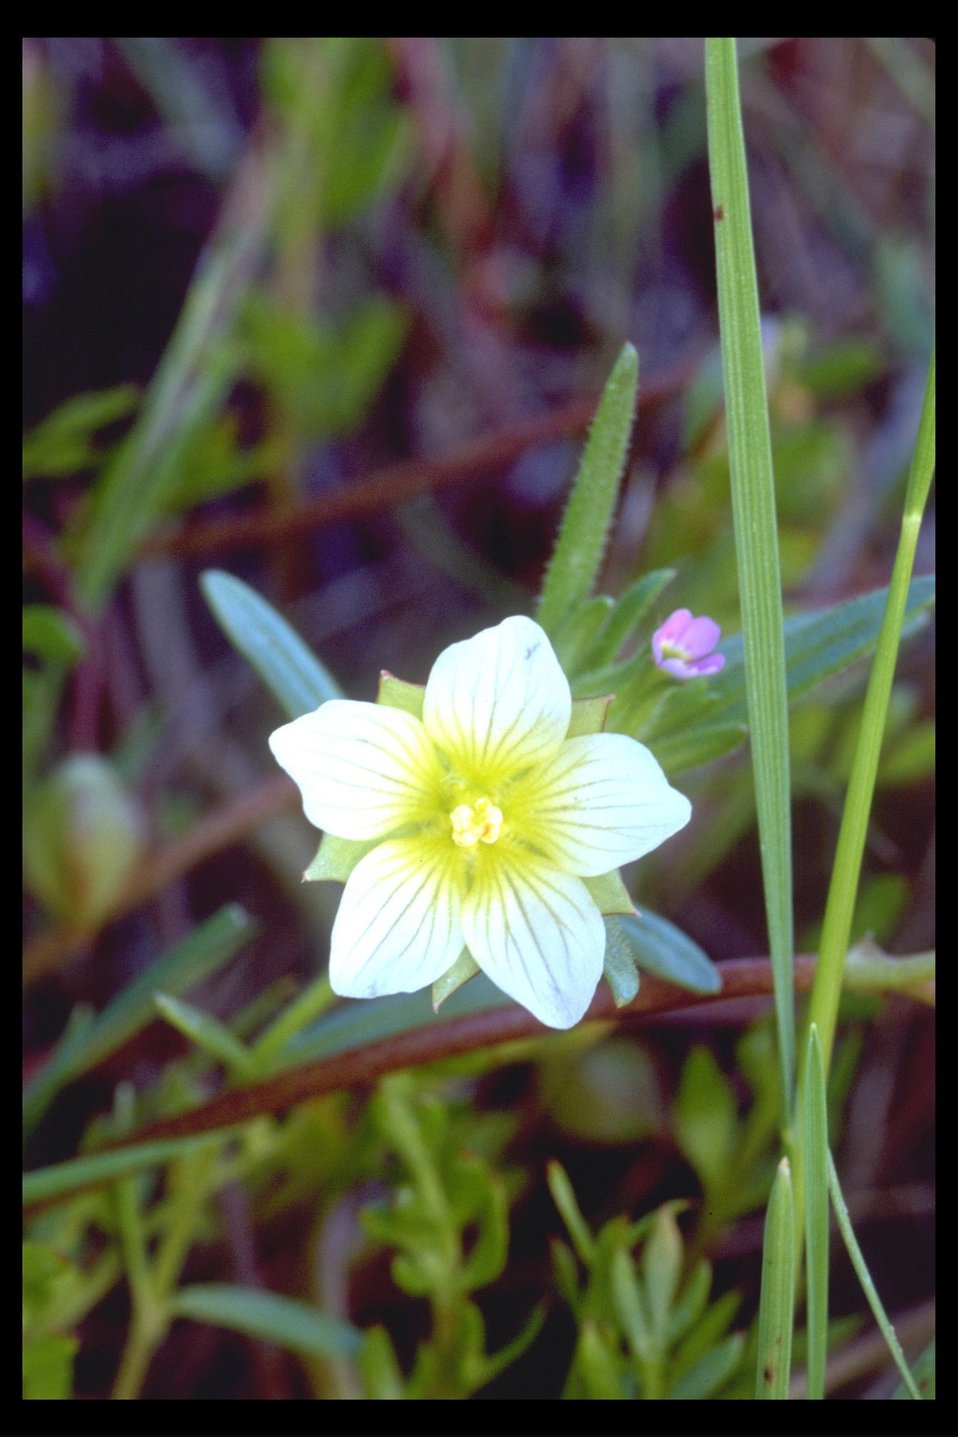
Dwarf Wooly Meadowfoam (Limnanthes floccossa ssp. pumila) found at the Upper Table Rock. note: this species only grows on the Table Rocks!